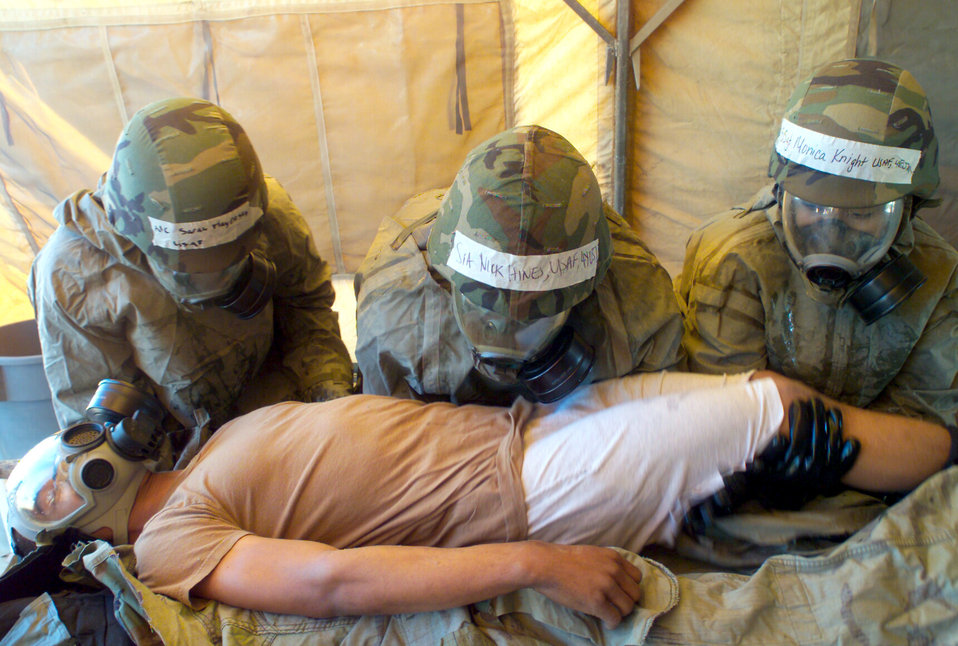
We're being bushwhacked!

DAVIS-MONTHAN AIR FORCE BASE, Ariz. -- Airman Sarah Mayersky (left), Senior Airman Nick Hines (center) and Staff Sgt. Monica Knight lift Senior Airman Virgil Bandy off his